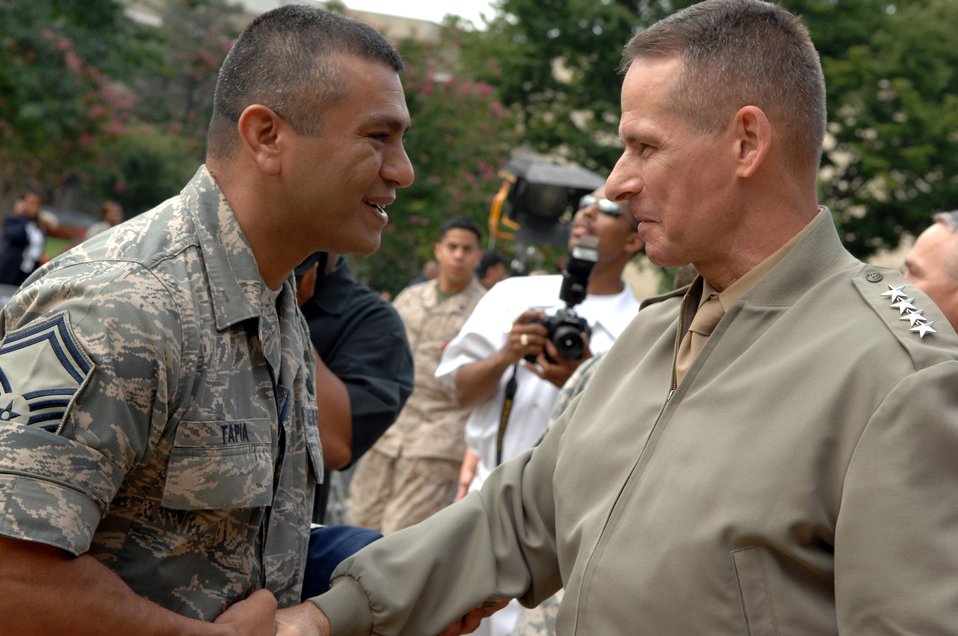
Farewell from the chairman

Marine Corps Gen. Peter Pace, chairman of the Joint Chiefs of Staff, thanks Senior Master Sgt. Gerardo Tapia during a